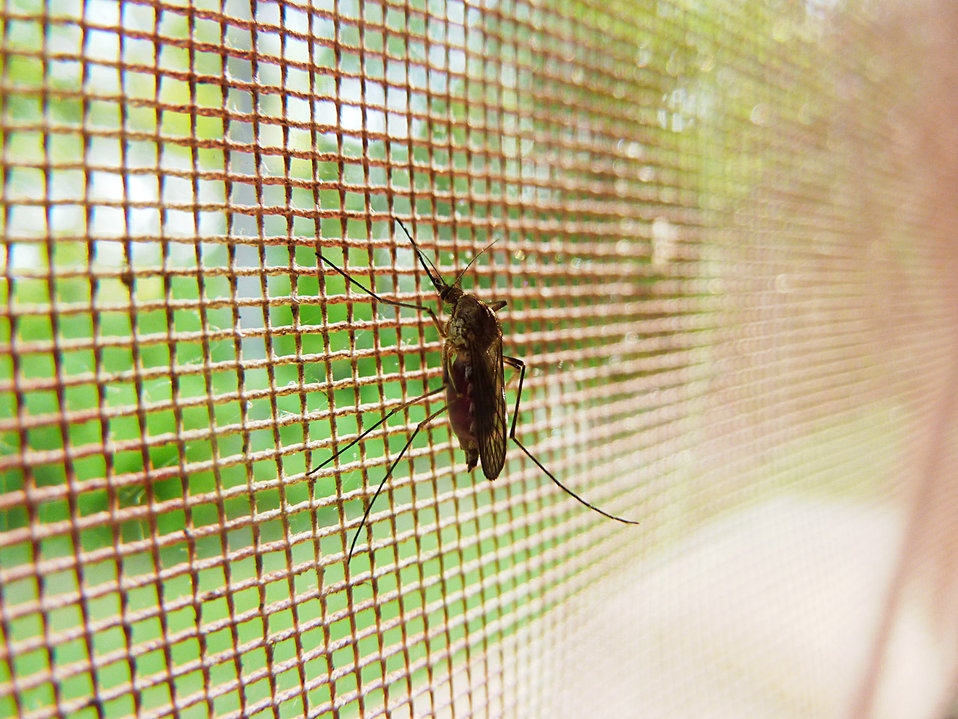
Mosquito full of blood.